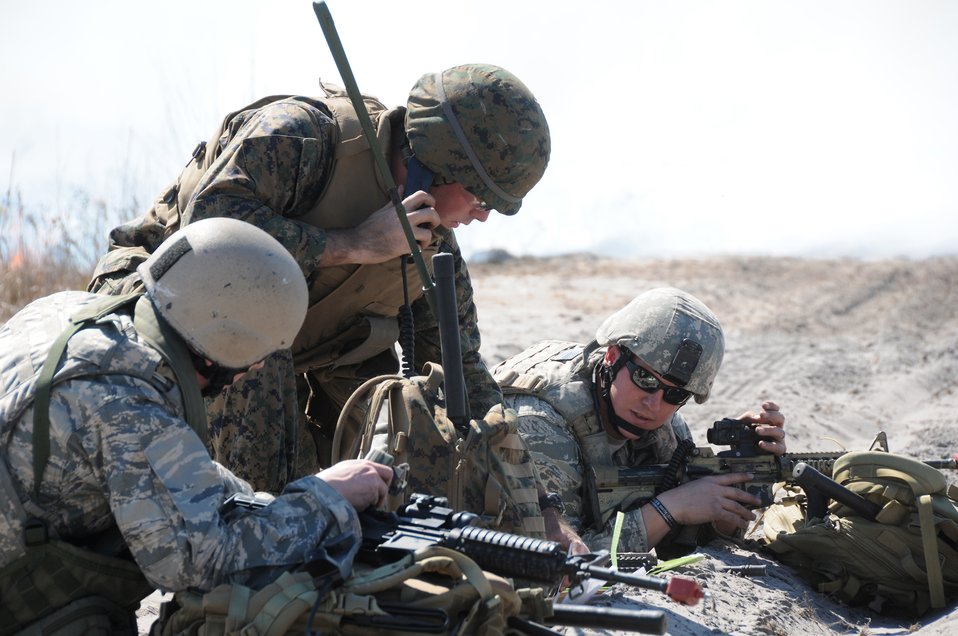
Atlantic Strike

Staff Sgt. Cody McNorton, Senior Airman Joseph Flynn, and Marine Corps 2nd Lt. Jared Cooper call in information Feb. 15, 2011, during exercise Atlantic Strike at Avon Park Air Force Range, Fla. Atlantic Strike is a coalition air-to-ground training exercise that simulates a deployed environment.